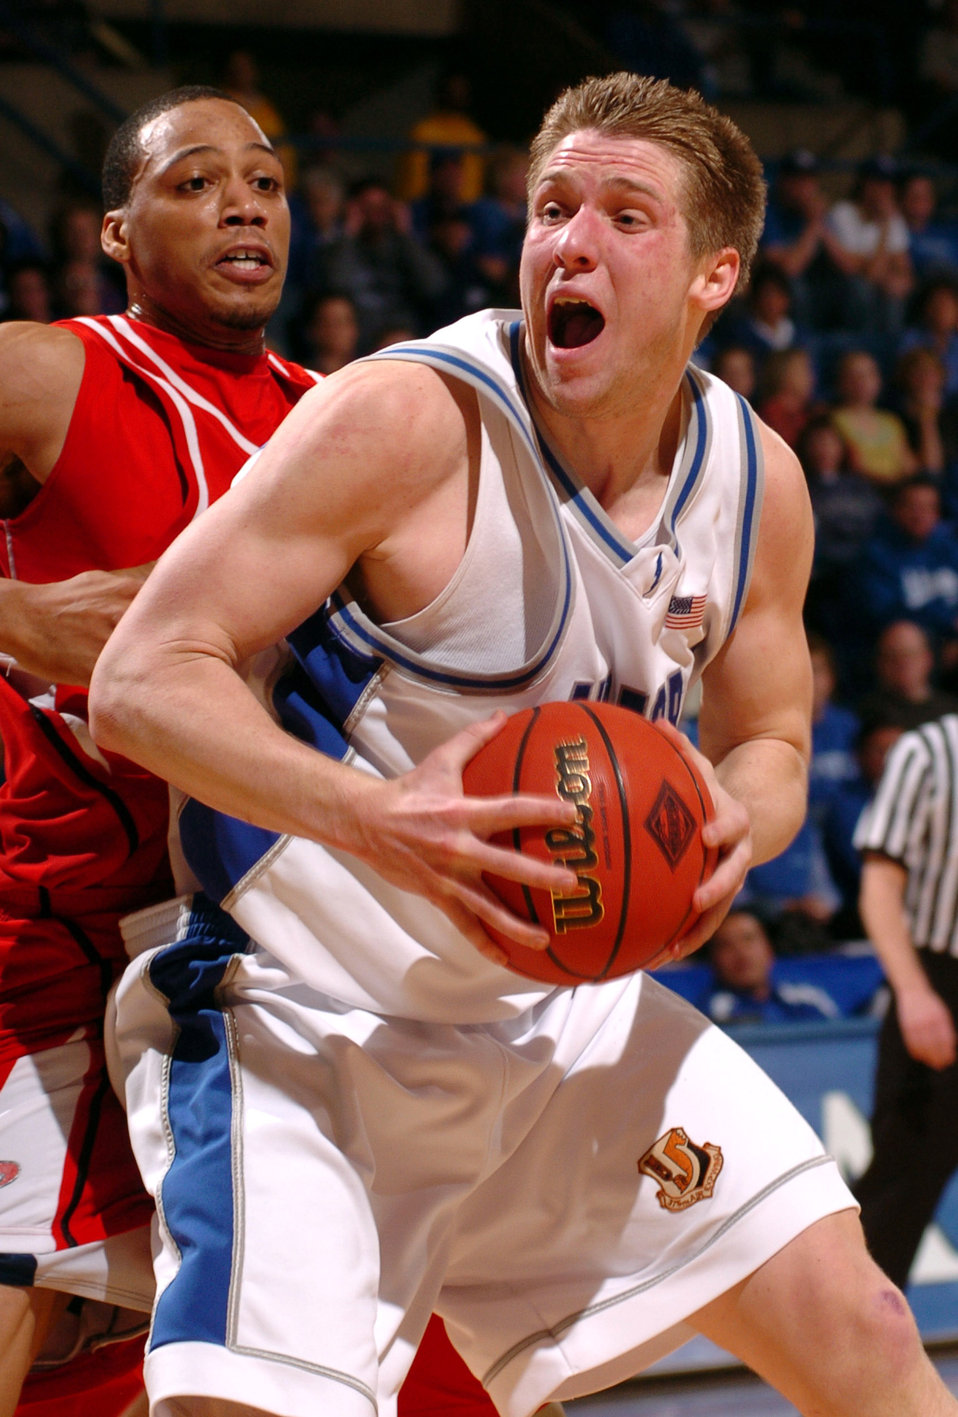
Falcons fly high in NIT debut

Air Force forward Jacob Burtschi is defended by Austin Peay forward Fernandez Lockett in the first-round game of the National Invitation Tournament at the Air Force Academy's Clune Arena March 14. All five Falcon starters, including Burschi, scored 13 points in their 75-51 win over the Governors in Air Force's first post-season victory in school history.